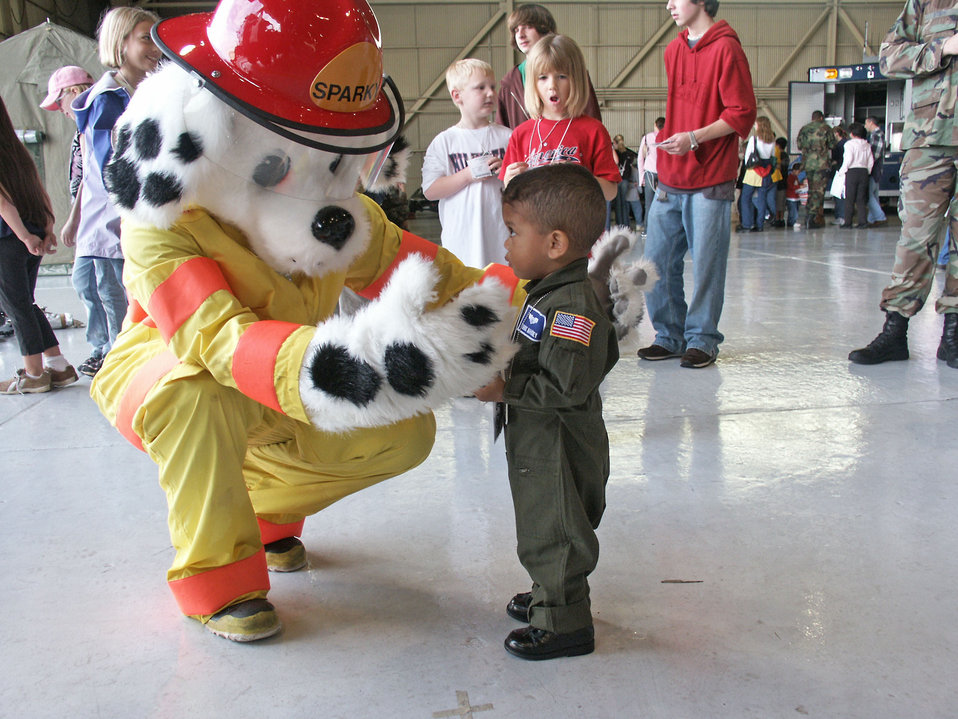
Operation Hero 'deploys' Airmen's children

EGLIN AIR FORCE BASE, Fla. -- Dominic Mahoney warms up to Sparky the Fire Dog during Operation Hero held here Jan. 8. The event was designed to help children better understand what a deployment is and what happens when their parents deploy. The fire department helped children with remembering who and how to call for help in case of an emergency. Dominic, 2, is the son of Senior Master Sgt. Kevin Mahoney of the 33rd Maintenance Squadron.